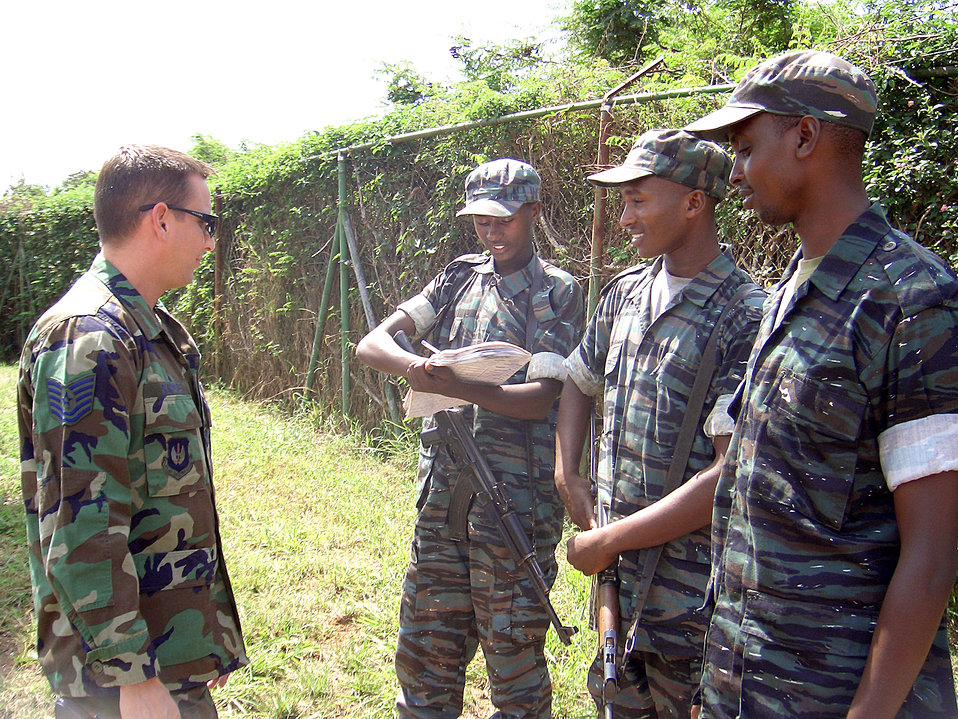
USAFE, Rwandan security forces protect airlift mission

KIGALI, Rwanda -- Tech. Sgt. Sean Garcie consults with Rwandan security forces troops about entry control procedures. Airmen with the 786th Security Forces Squadron at Sembach Air Base, Germany, and 435th SFS at Ramstein AB, Germany, are protecting people and aircraft during the 86th Air Expeditionary Group's airlift mission here.